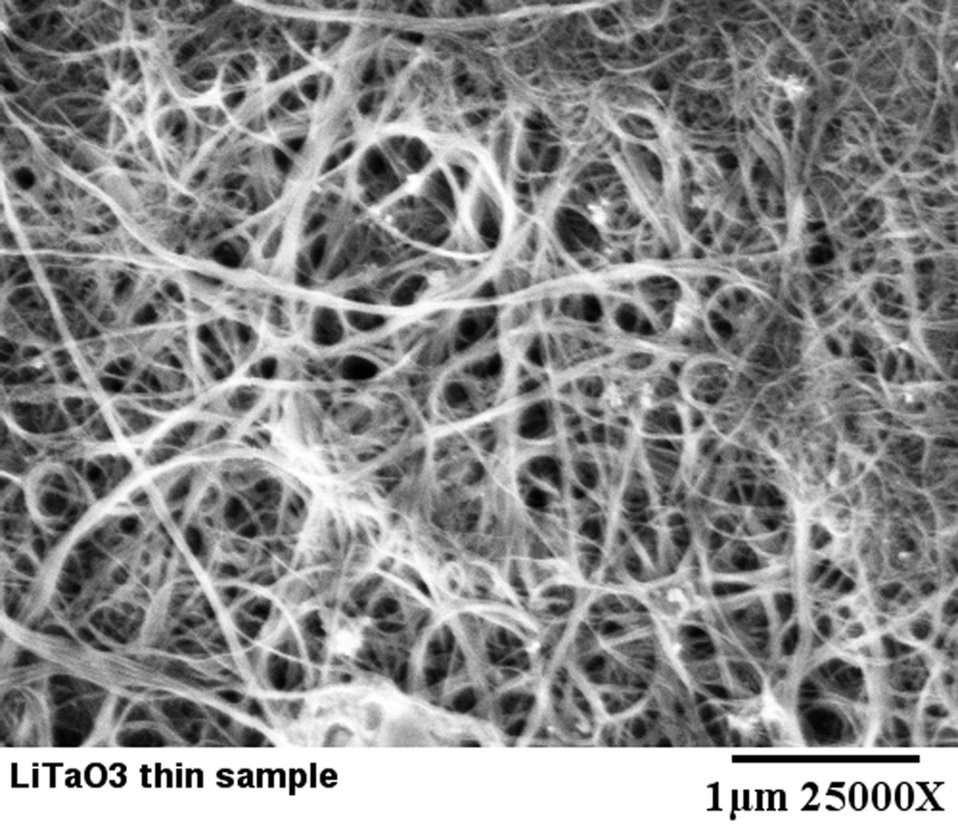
NIST Laser-Based Method Cleans Up Grubby Nanotubes

A before microscope image of a pyroelectric detector coated with single-walled nanotubes (SWNTs) visually demonstrate the effect of the laser cleaning process. The SWNTs look visibly blacker after laser treatment, suggesting less graphitic material and increased porosity.